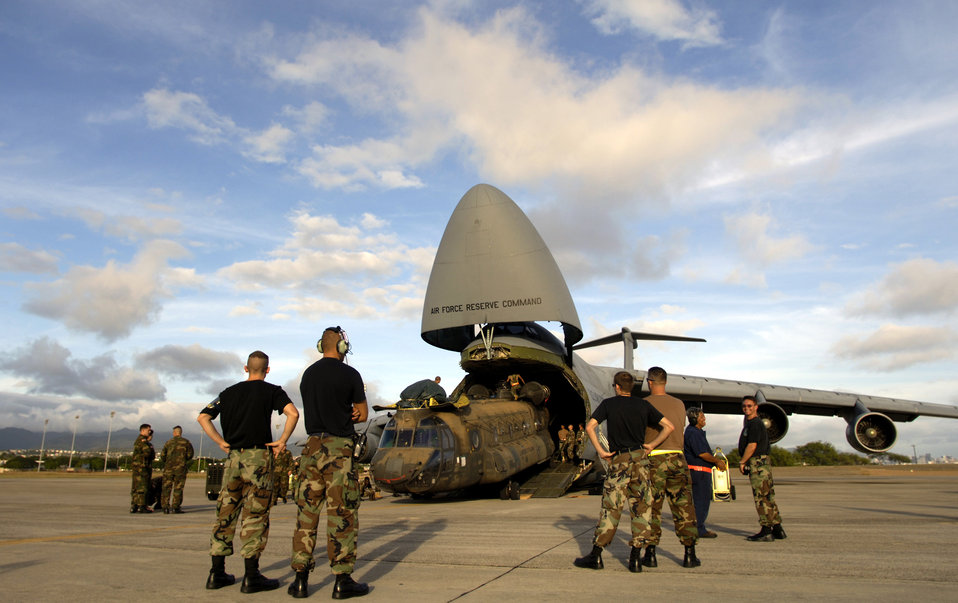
Pakistan relief efforts

HICKAM AIR FORCE BASE, Hawaii -- Airmen and Soldiers load a CH-47 Chinook heavy lift helicopter onto a C-5 Galaxy here. Company B, 214th Aviation Regiment of the 2nd Battalion, 25th Aviation Regiment at nearby Wheeler Army Air Field, received orders to deploy 60 troops, four helicopters and support equipment to Pakistan to support earthquake relief operations. A total force team here helped load the aircraft Oct. 16.